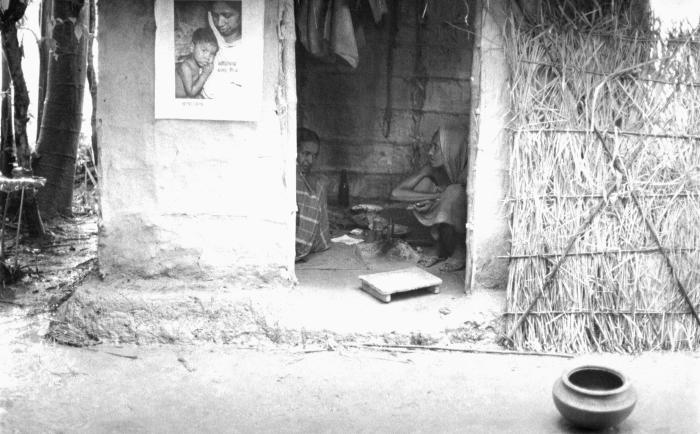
This was a typical village home depicting the state of poverty seen dispersed throughout the Bangladesh communities. Each one of these residences had to be checked in order to determine whether or not a smallpox case was present. There were two strategies for eradicating smallpox. First, to find villages in which there were one or more cases, and secondly, controlling those case, i.e., preventing the spread of the virus, and treating the ill. During these country-wide searches for smallpox, the goal was to investigate each one of the 12 million Bangladesh homes, in order to show residents the smallpox case photograph, as well as to announce the money reward for anyone reporting a case, and to ask if they had seen or knew of any cases resembling the one pictured. A post-search survey indicated that 86% of houses were in fact visited, which numbered 10.3 million households.